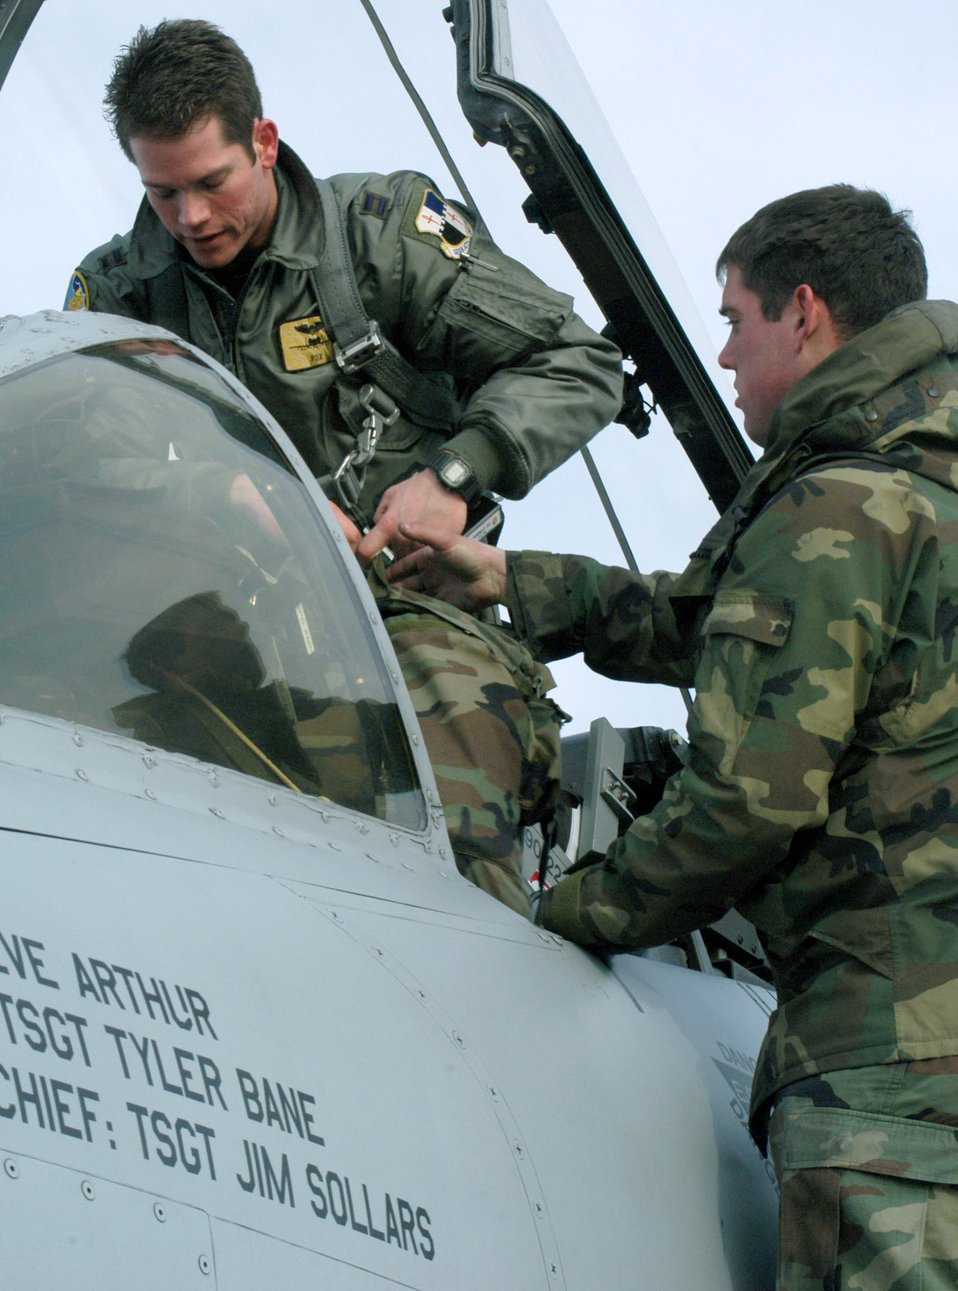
Whiteman Reserve wing teams up with Spangdahlem pilots

Strapping into an A-10 Thunderbolt II, Capt. David Kirkendall gets assistance from 442nd Fighter Wing crew chief Airman 1st Class Jeremy Cline on the Whiteman Air Force Base, Mo., flightline. Captain Kirkendall is a pilot with the 81st Fighter Squadron from Spangdahlem Air Base, Germany. He and several other A-10 pilots are training with Whiteman AFB's 442nd FW reserve unit until May to catch up on training missions that can't be met in Germany.